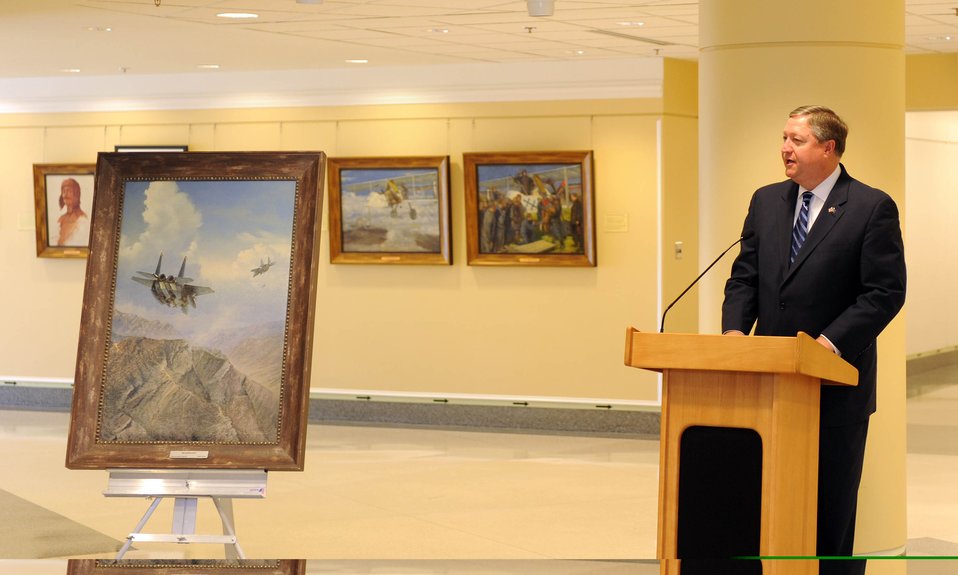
same

Secretary of the Air Force Michael Donley speaks at the opening of the Air Force Art Gallery in the Pentagon March 18, 2010. The gallery is located at the fifth-floor apex of corridors 9 and 10 in the Pentagon. The opening featured paintings by the first aviation artist, France's Henri Farre, and the latest addition,